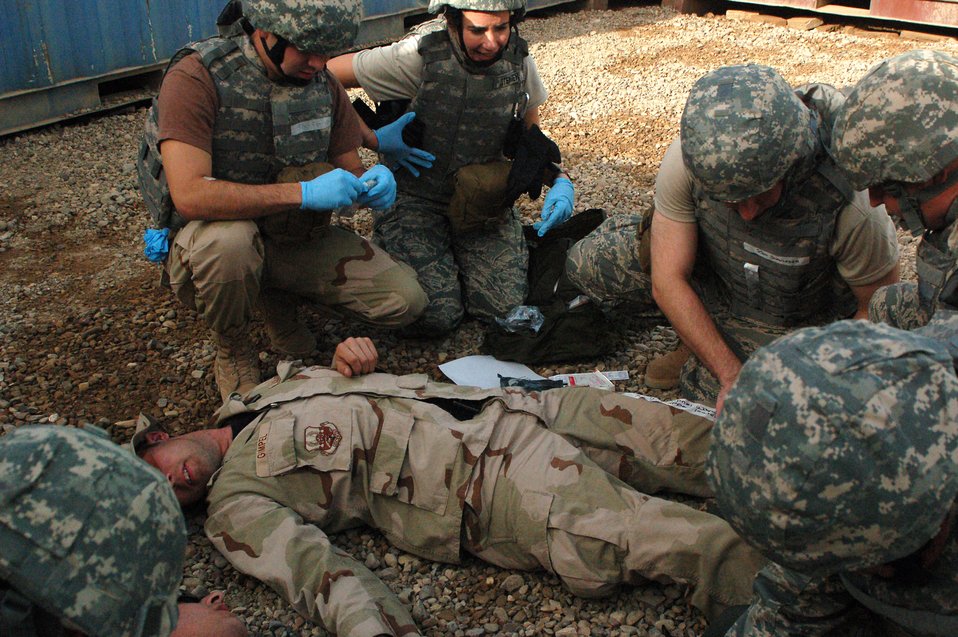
Sather medics prepare for worst,

Staff Sgt. Jalayne Powers (left) and Lt. Col. Patricia Hartman assess the simulated injuries of Senior Master Sgt. Michael Brown March 21 at Sather Air Base, Iraq. The injuries are the result of a simulated unexploded oridence detination. The training teaches medical skills to non-clinical unit members. Sergeant Powers is a 447th Expeditionary Medical Squadron bioenvironmental engineer technician. Colonel Hartman is the chief administrator with the 447th EMEDS. Sergeant Brown is the 447th Expeditionary Civil Engineer Squadron's fire department fire chief.